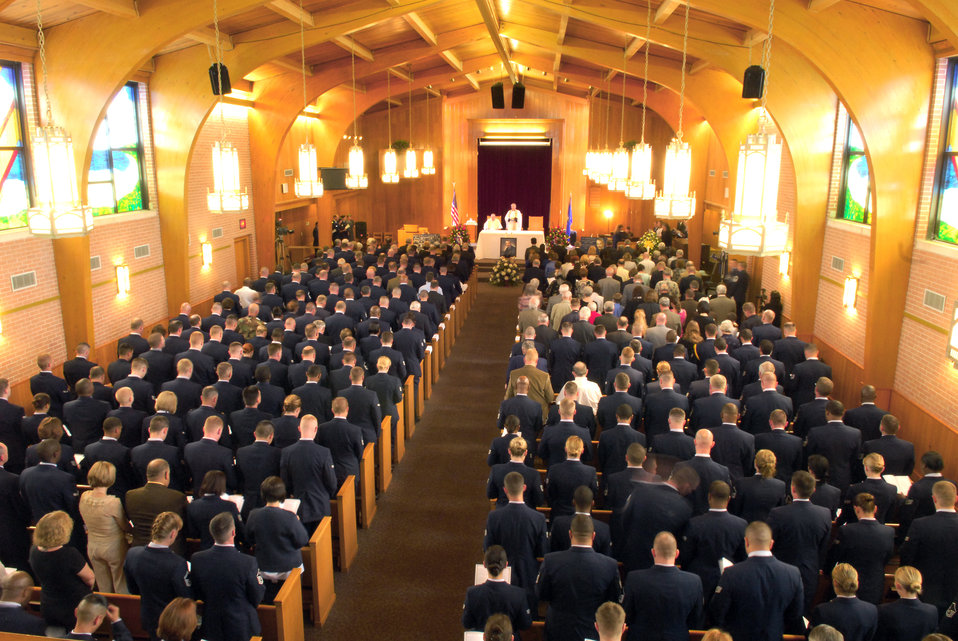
Airey memorial service celebrates life of AF hero

Members in attendance for the March 16 memorial service of the first Chief Master Sgt. of the Air Force, Paul W. Airey, bow their heads in silence as a prayer is delivered. Upon taking the podium to speak during the service, current Chief Master Sgt. of the Air Force Rodney McKinley said,